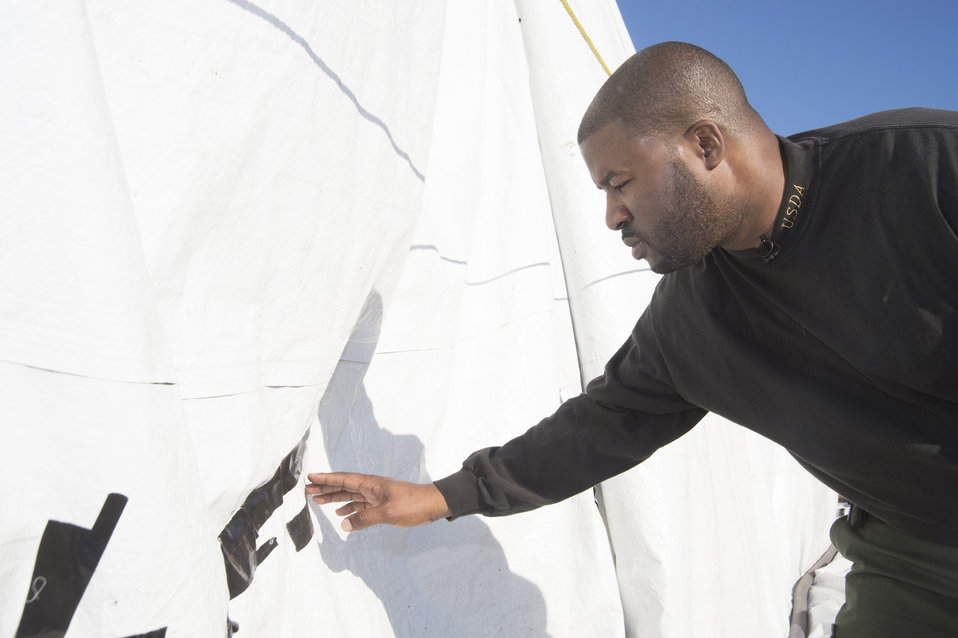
U.S. Department of Agriculture’s (USDA) Animal and Plant Health Inspection Service (APHIS) employee examines the fumigaion tent used on U.S. logs for export near the Port of New Orleans in New Orleans, LA on Wednesday, Nov. 20, 2013. The fumigation process prevents the spread of any bacteria or insect that might cause harm to a foreign country’s agriculture.